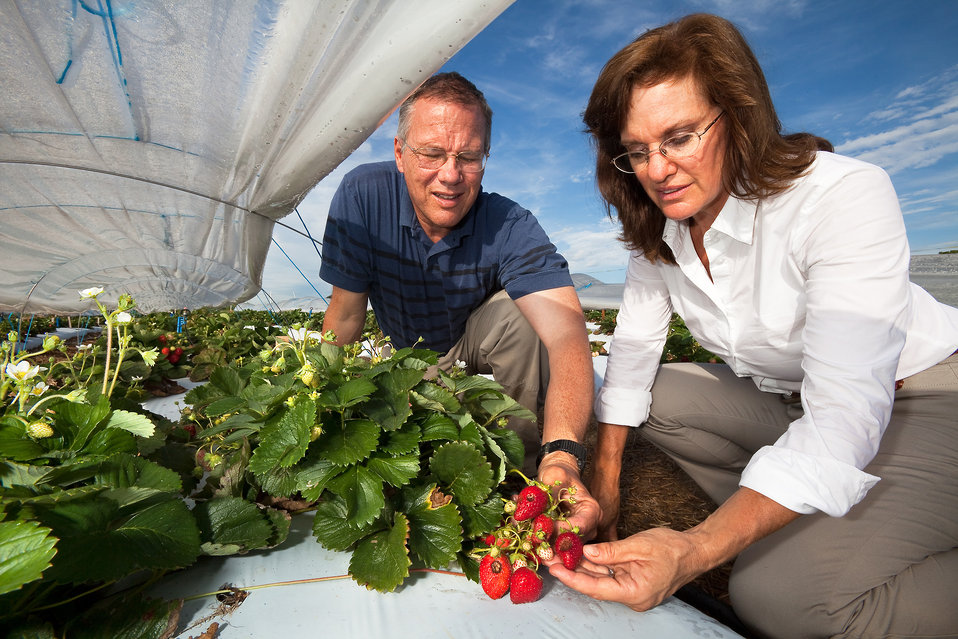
U.S. Department of Agriculture (USDA) Agricultural Research Service (ARS) geneticist Kim Lewers and horticulturalist John Enns observe strawberries with anthracnose fruit rot inside a low tunnel that extends the fruit’s growing season on July 26, 2012. The next goal is to transfer disease resistance to future varieties to reduce disease incidence.